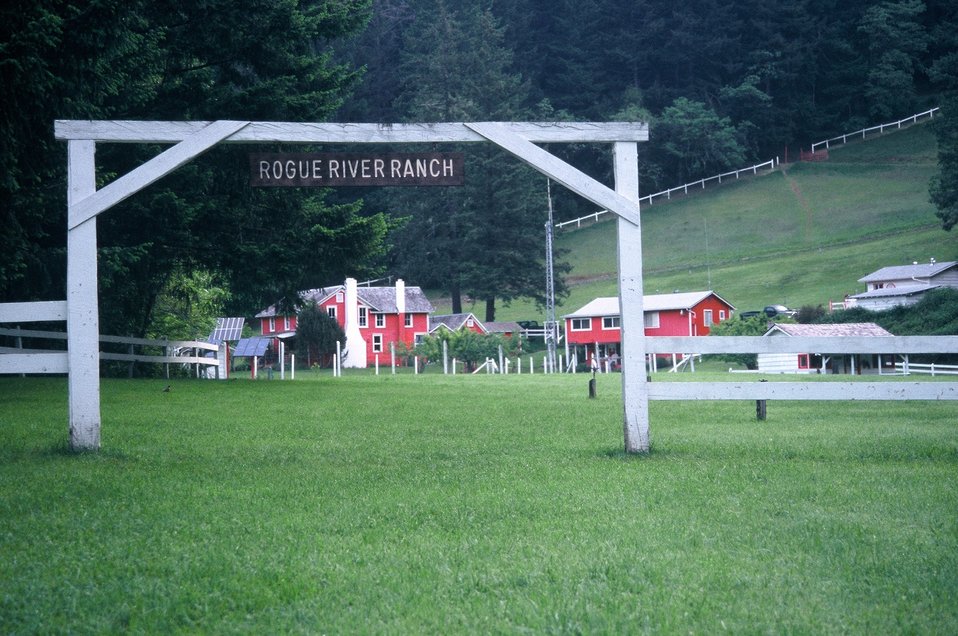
Wild section of the Rogue River from Grave Creek to Foster Bar May 19 to May 22.